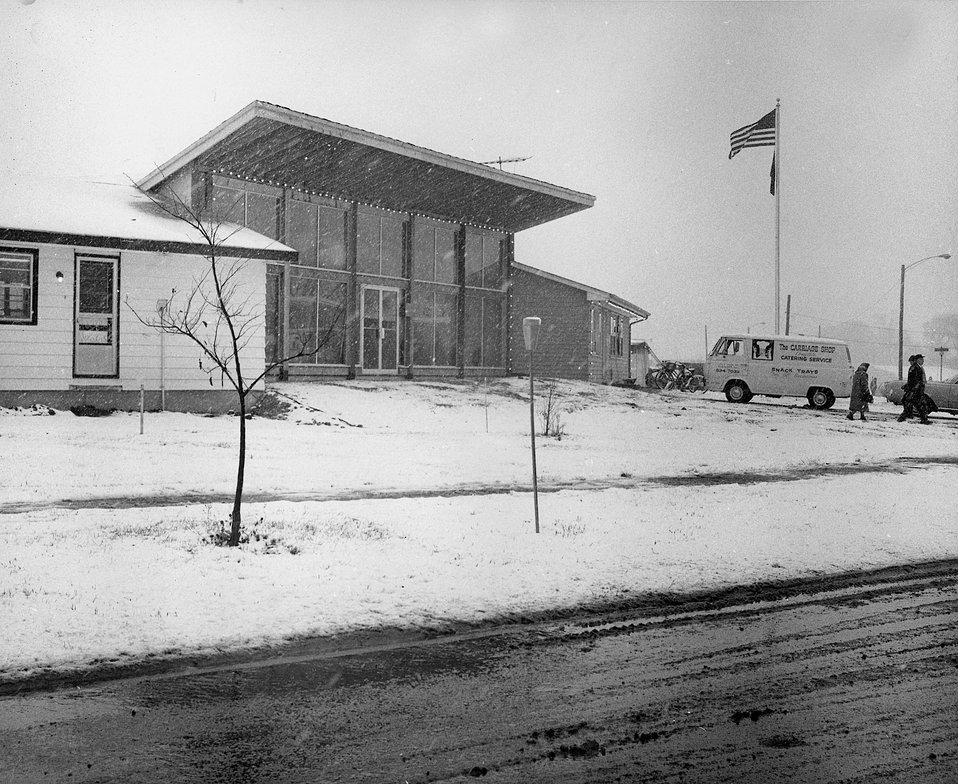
The Curia, sandwiched between the Director's Offices , on the far side, and a house, on the left, which is the future office for Dr. M. Stanley Livingston, Associate Director, NAL.
c.1968